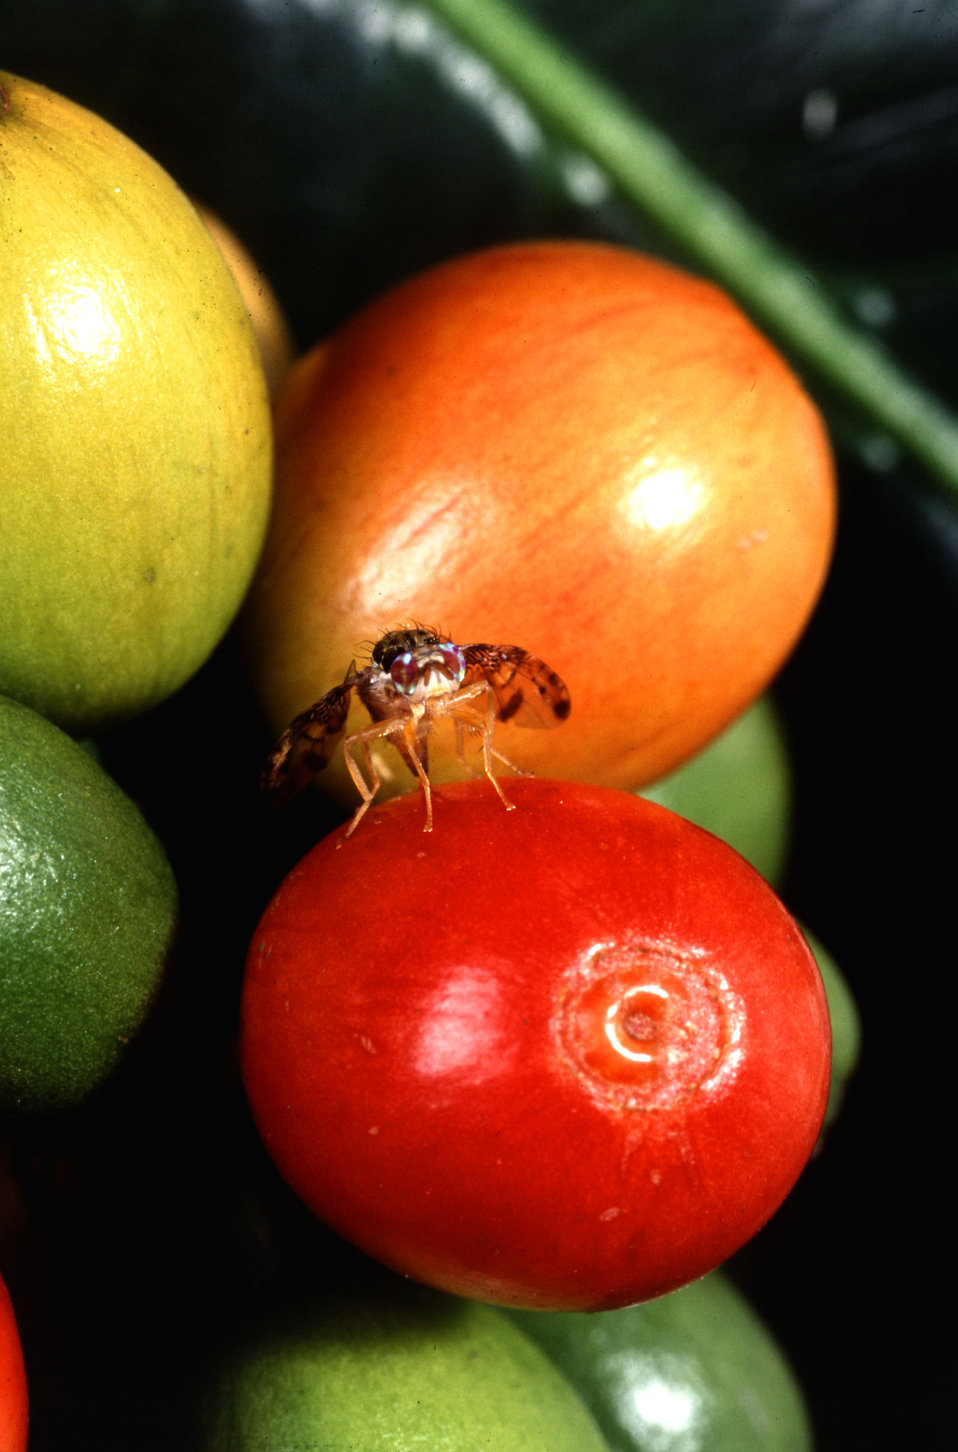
A female Mediterranean fruit fly or medfly pumps eggs through her ovipositor into the soft outer layers of a ripe coffee berry.